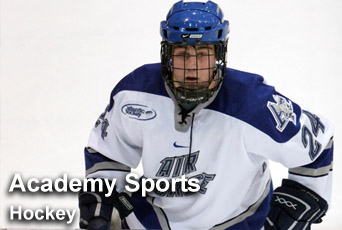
Academy sports: Hockey

For up-to-date scores on all U.S. Air Force Academy sports, visit their Web site at www.goairforcefalcons.com.